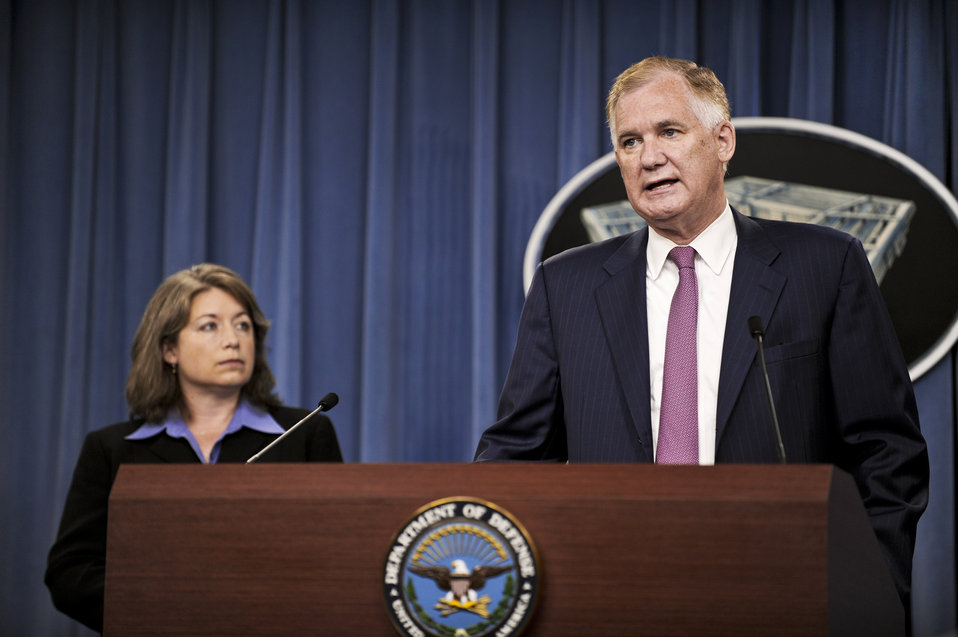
Energy strategy

Deputy Defense Secretary William J. Lynn III and Sharon Burke, the assistant secretary of defense for operational energy plans and programs, brief the Pentagon press corps June 14, 2011, on the Defense Department's operational energy strategy at the Pentagon in Washington.